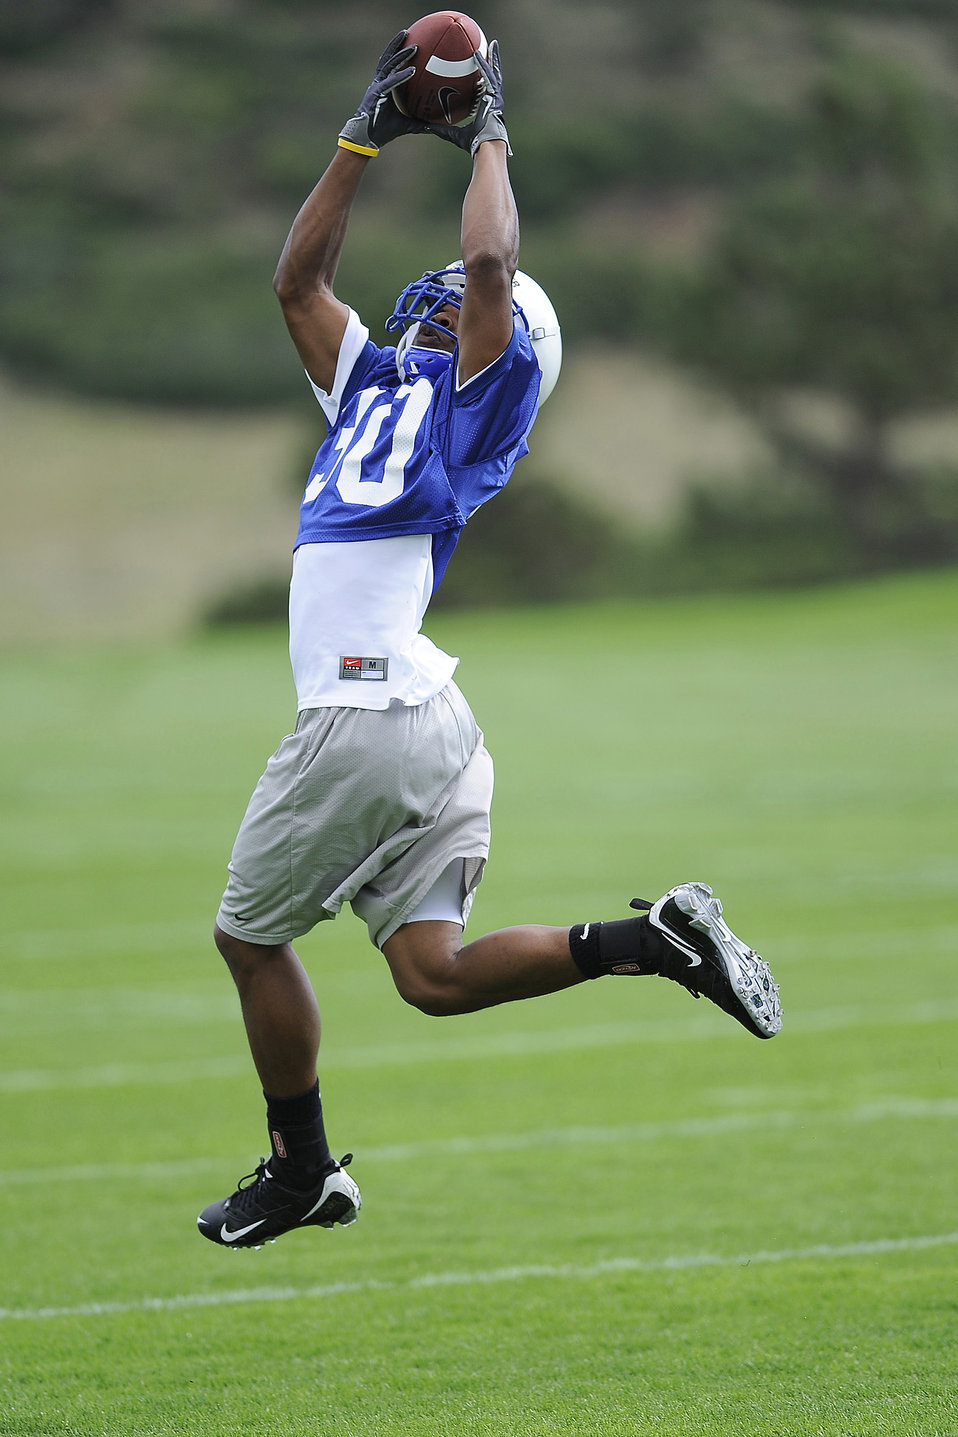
Got it!

Air Force Academy Falcons wide receiver Mikel Hunter brings in a pass Aug. 3, 2010, during football practice. Hunter, a third-class cadet at the Academy and native of Conyers, Ga., played in seven games during the 2009 season.